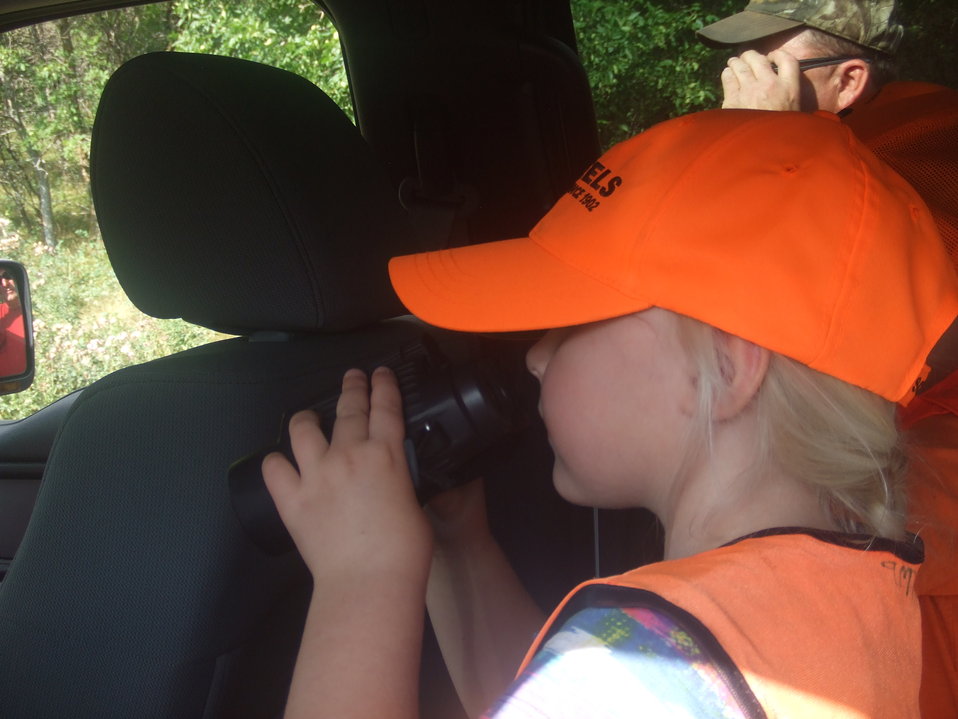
2011 Greenwing Day - Game Warden scenario session

Des Lacs National Wildlife Refuge, Tasker's Coulee